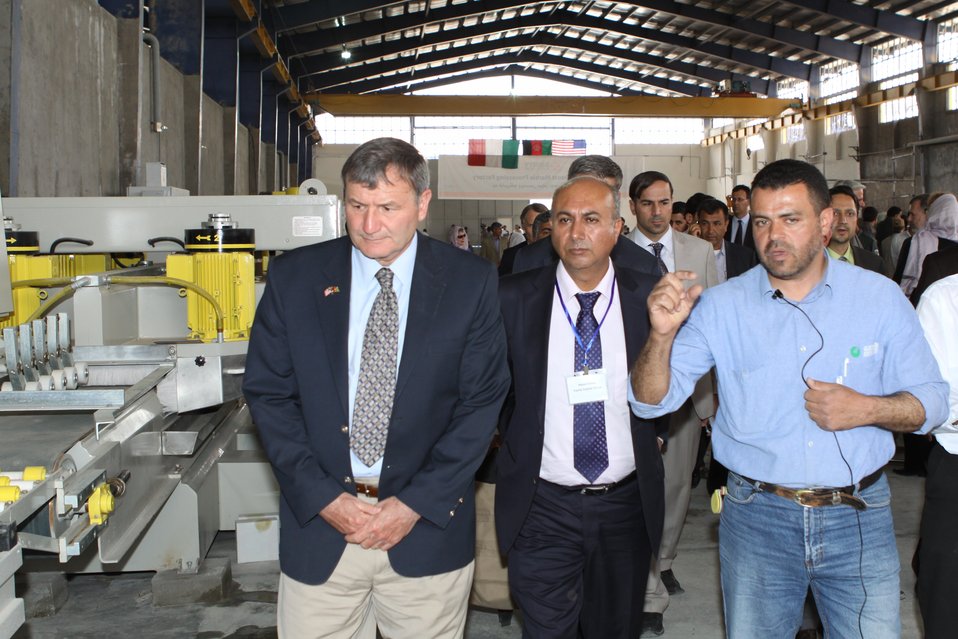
100525 Hirat Marble Conference 390